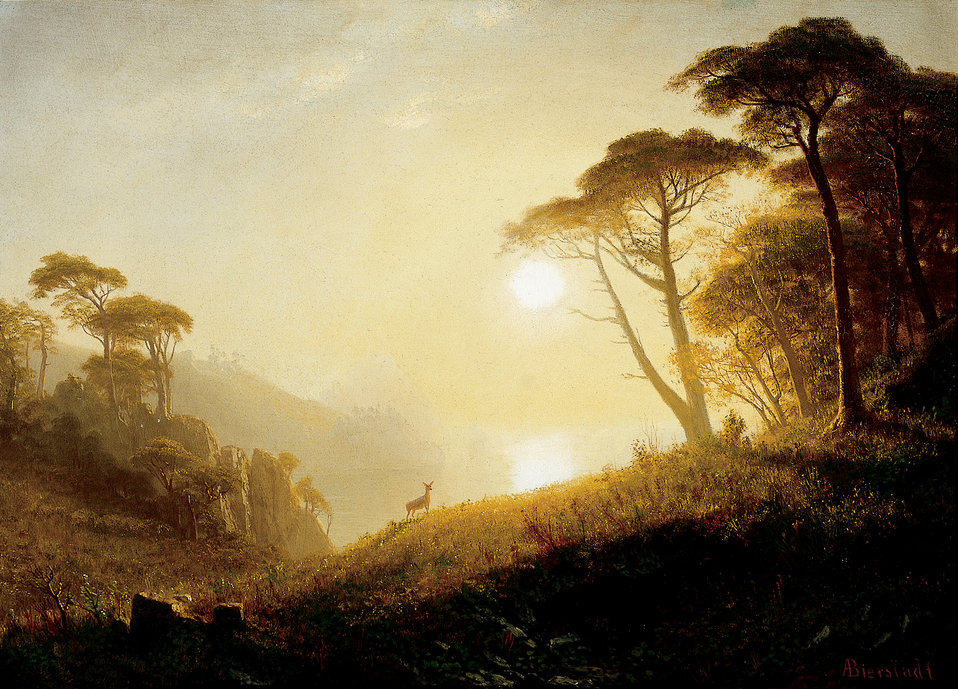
Albert Bierstadt - Scene in Yosemite Valley